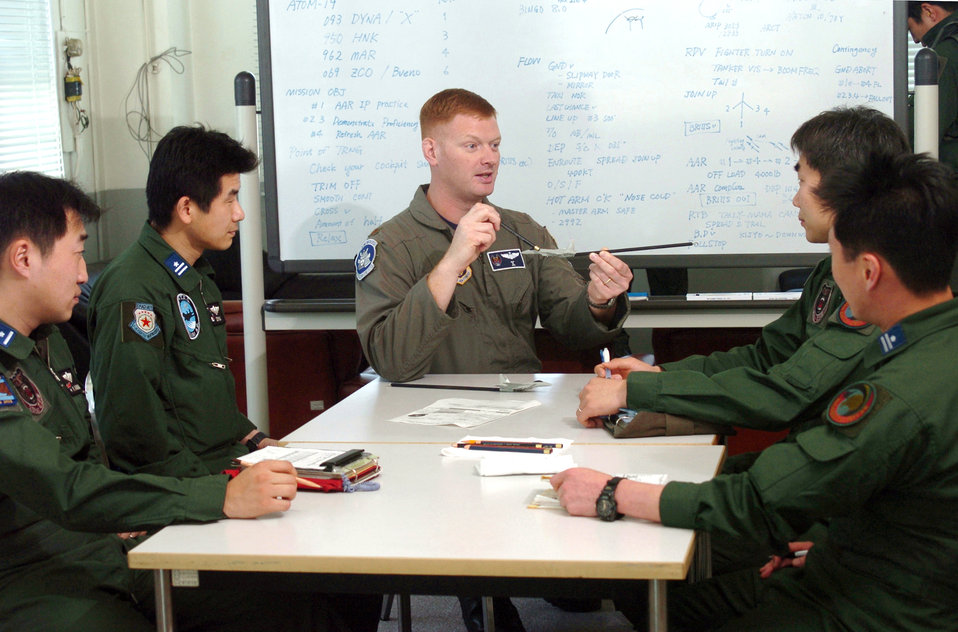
U.S., Japanese Airmen train together during air refueling

NYUTABARU AIR BASE, Japan -- Maj. Malcolm Kemeny discusses tactics during a preflight mission brief with Japanese airmen during hands-on air-to-air refueling training here. Japanese F-15 Eagle pilots, under the watchful eye of U.S. Airmen, are getting trained to qualify in aerial refueling. Major Kemeny is an F-15 pilot from the 18th Operations Group at Kadena Air Base, Japan.